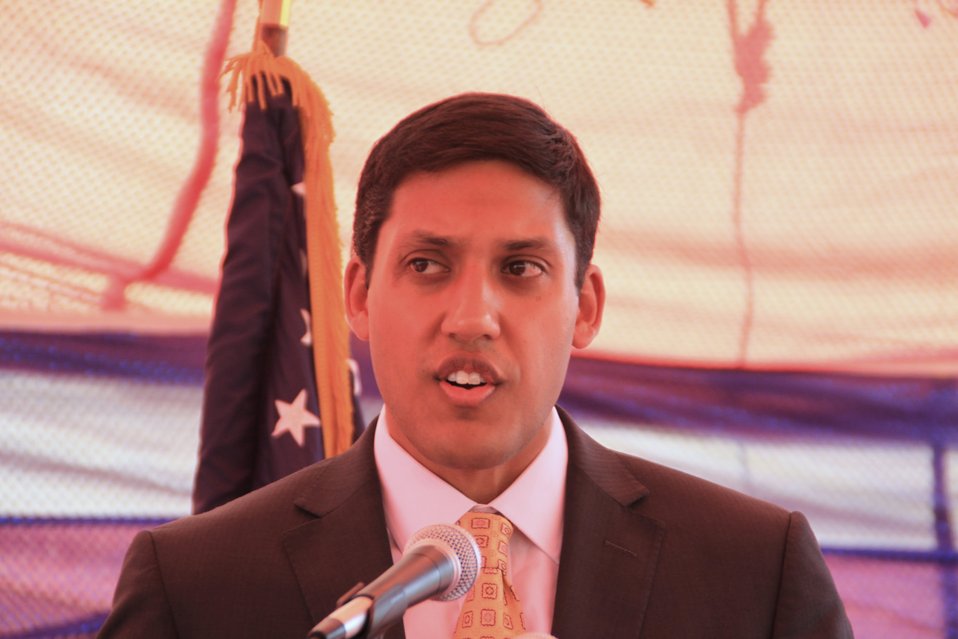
Badam Bagh Farm